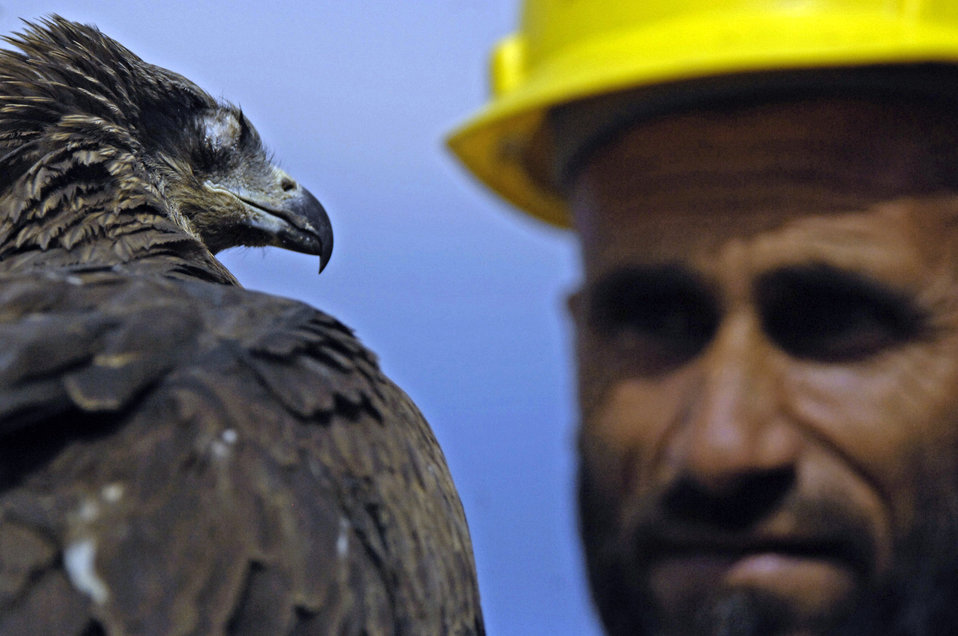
Safety experts spearhead efforts to minimize bird strikes

An Afghan falconer holds one of his falcons March 29 at Bagram Airfield, Afghanistan. The 455th Air Expeditionary Wing safety office hired three local falconers to help clear out areas near the flightline that were swarmed with thousands of birds. After a week of work, the falconers had caught or killed more than 250 birds surrounding the flightline and have apparently scared off most of the remaining birds over the past three weeks.